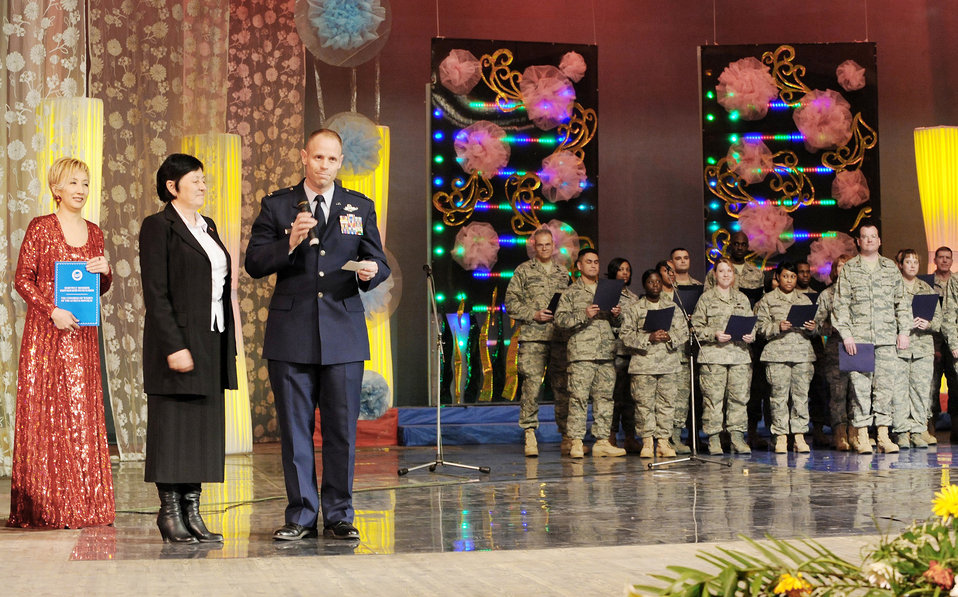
Airmen participate in Kyrgyz Philharmonic

Col. Blaine Holt speaks to audience members during the centennial anniversary of International Women's Day concert at the Kyrgyz National Philharmonic Feb. 25, 2010, in Bishkek, Kyrgyzstan. Colonel Holt delivered his speech in Kyrgyz, and Valentina Turabekova (center) translated his words from Kyrgyz to Russian. The Congress of Woman of the Kyrgyz Republic hosted 25 Airmen from the Transit Center at Manas in Kyrgyzstan who took part in the three-hour performance. Colonel Holt is the Transit Center director.